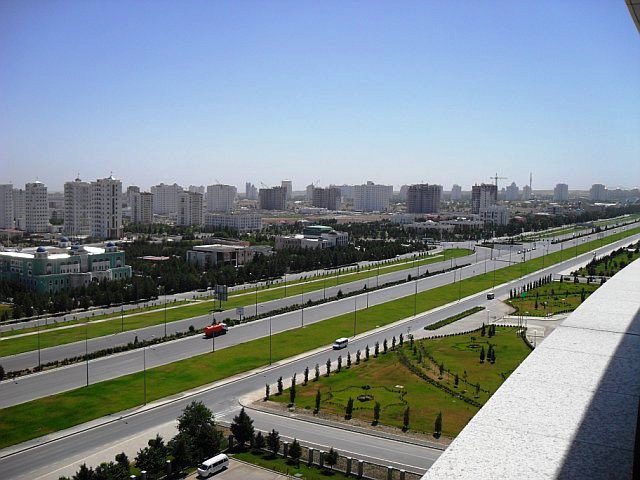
SCA Special Assistant Morgan Takes a Photo of Ashgabat, Turkmenistan

Rebecca S. Morgan, Special Assistant for the Bureau of South and Central Asian Affairs, takes a photo of Ashgabat, Turkmenistan, on June 14-16, 2010.